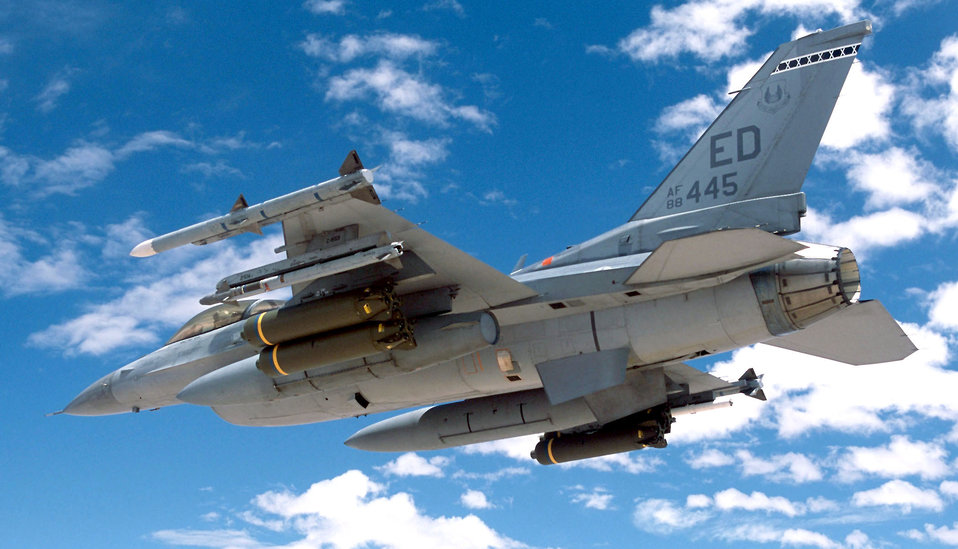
F-16 test team conducts first guided launch of AIM-9X

OVER CALIFORNIA -- An F-16 Fighting Falcon flies near China Lake Naval Air Weapons Center, Calif., during a successful AIM-9X test. The aircraft and pilot are from the 416th Flight Test Squadron at Edwards Air Force Base, Calif.